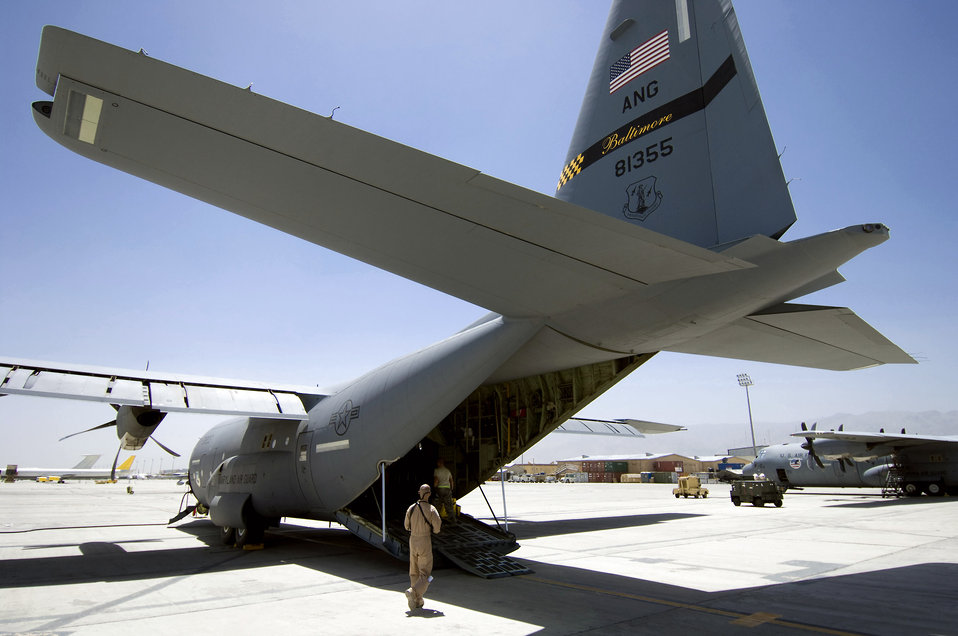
Airframes transform to 'aerovac'

An Air National Guard C-130 Hercultes from Baltimore, Md., sits on the tarmac July 8 at Bagram Air Field, Afghanistan. Members of the 455th Expeditionary Aeromedical Evacuation Flight work to quickly convert the aircraft for an aeromedical evacuation.